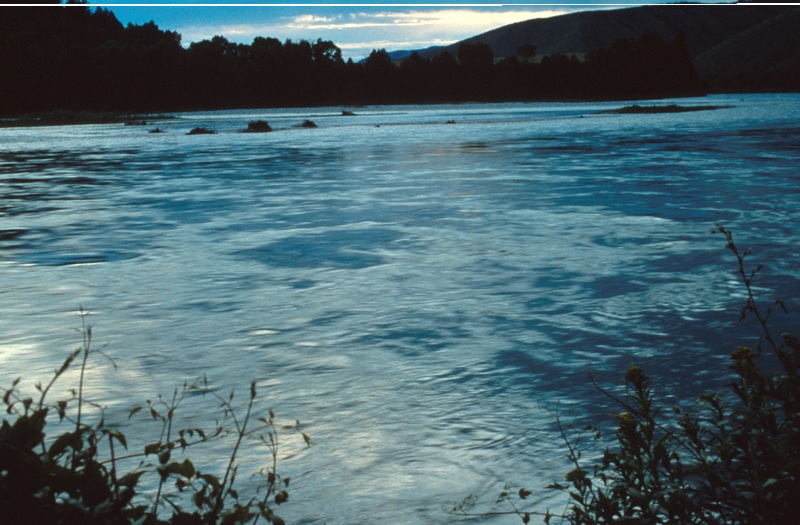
South Fork of the Snake River Upper Snake River District